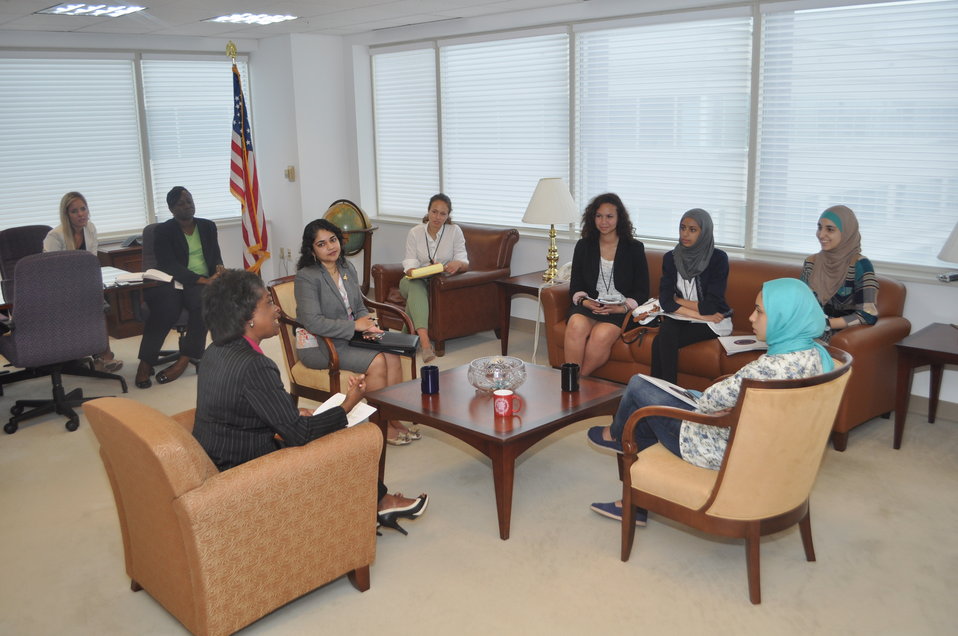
TECH GIRLS with Chairwoman Clyburn 7-11-2013

Chairwoman Clyburn discusses importance of changing technologies with Tech Girls (A State Dept international exchange program designed to empower young girls to pursue careers in science & tech) from Middle East & North Africa.